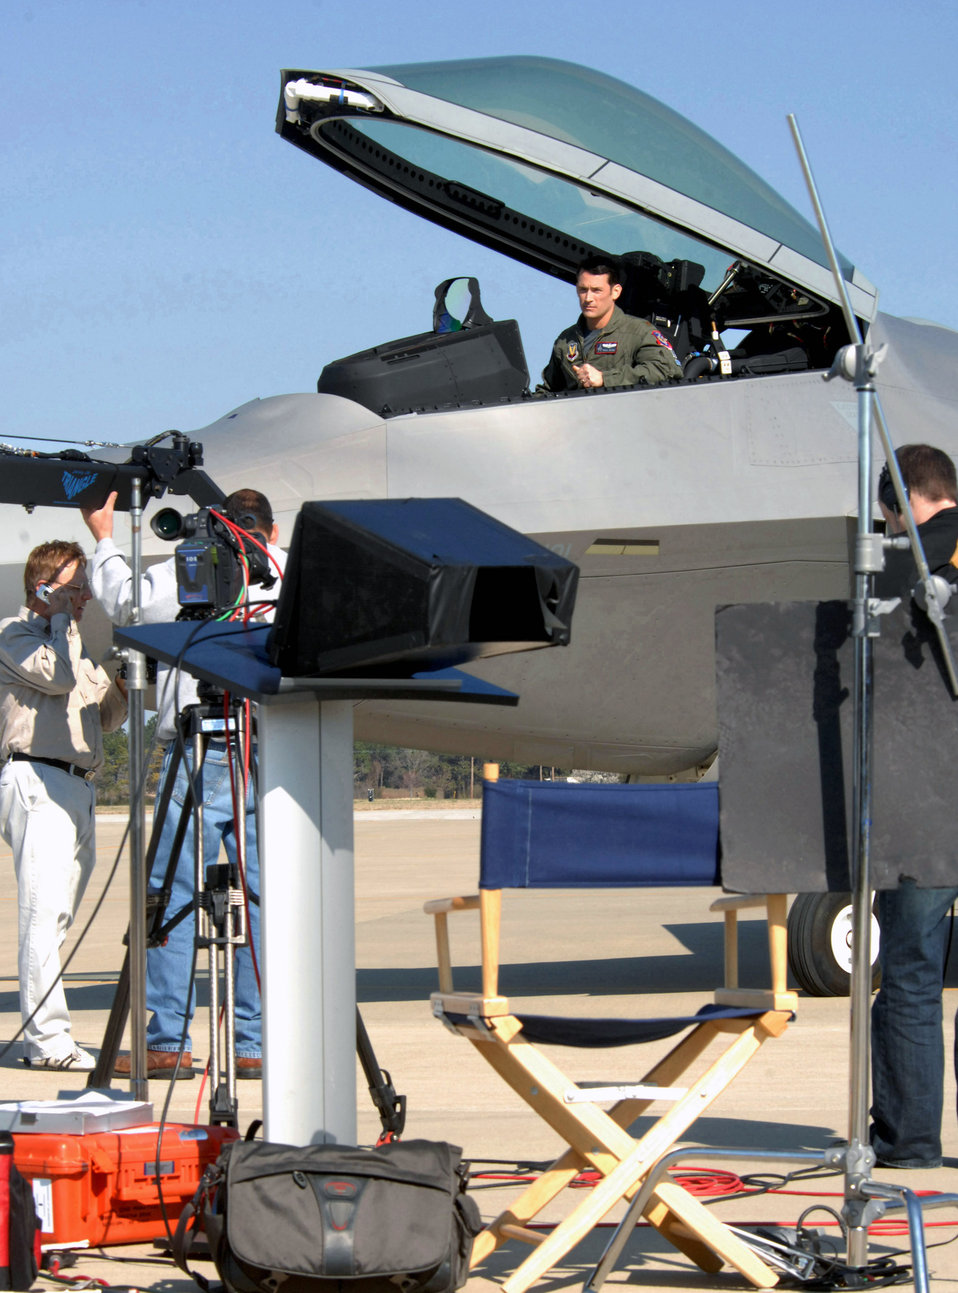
Discovery Channel

The Discovery Military Channel films an episode March 11 at Langley Air Force Base, Va. The episode, which is part of the series